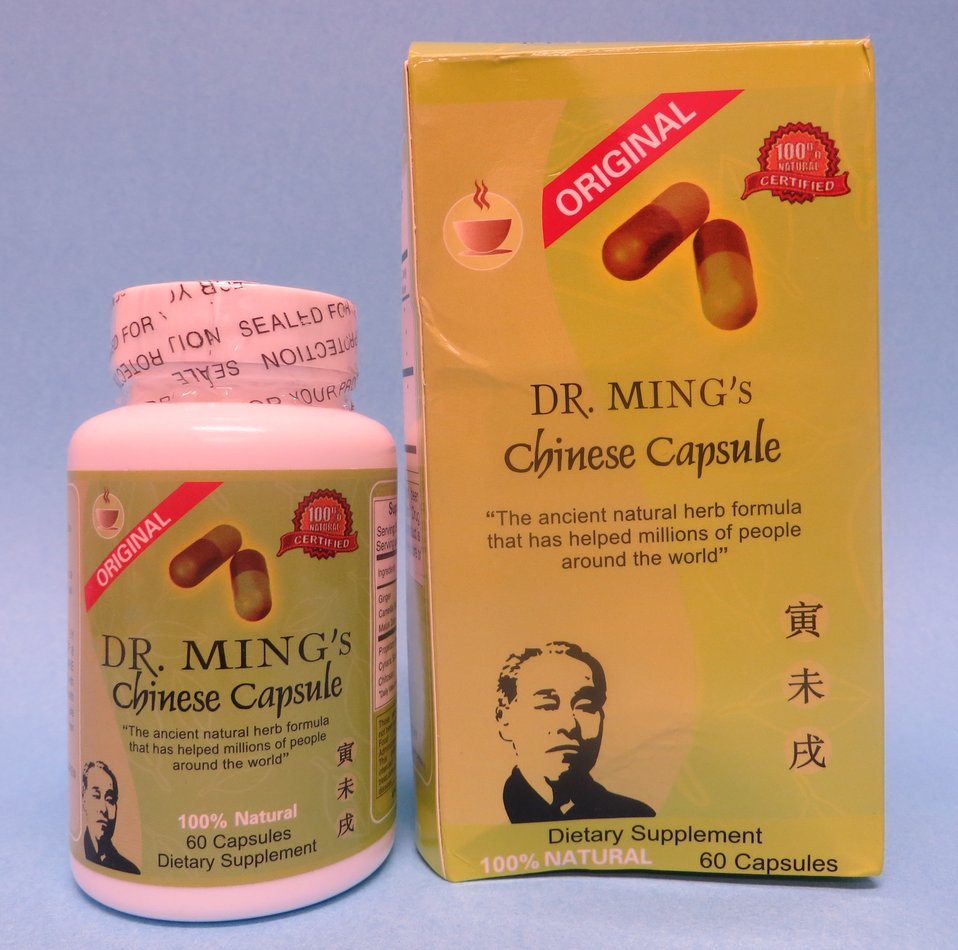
Dr. Ming's Chinese Capsule

December 19, 2013 - The FDA is advising consumers not to purchase or use 'Dr. Ming's Chinese Capsule,' a product promoted and sold for weight loss. The product was found to contain undeclared sibutramine. For more information, go to www.fda.gov/Drugs/ResourcesForYou/Consumers/BuyingUsingMe...

And read this Consumer Update: Beware of Fraudulent ‘Dietary Supplements’